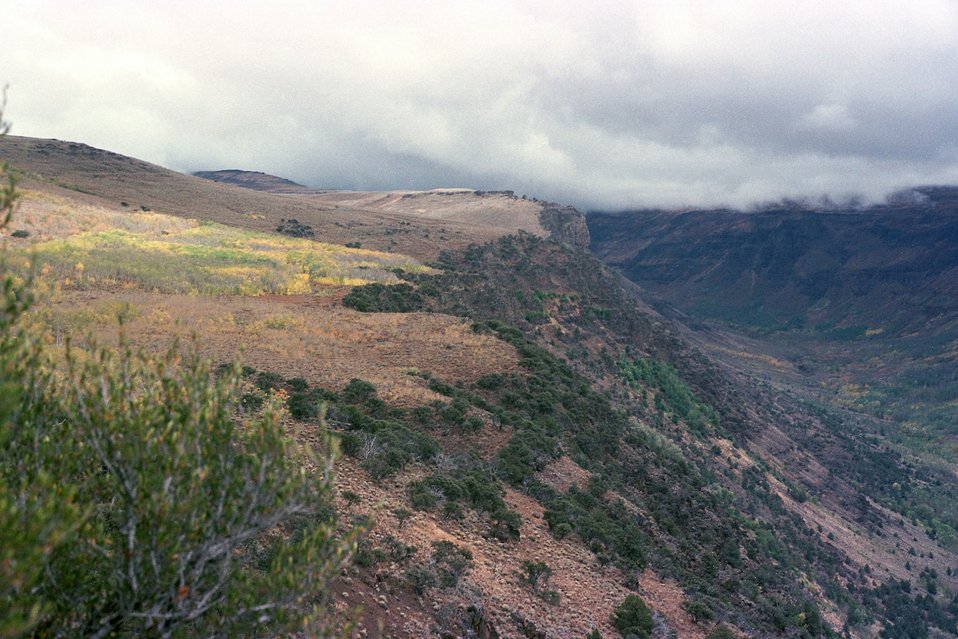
Fish Lake at Steen's Mountain.